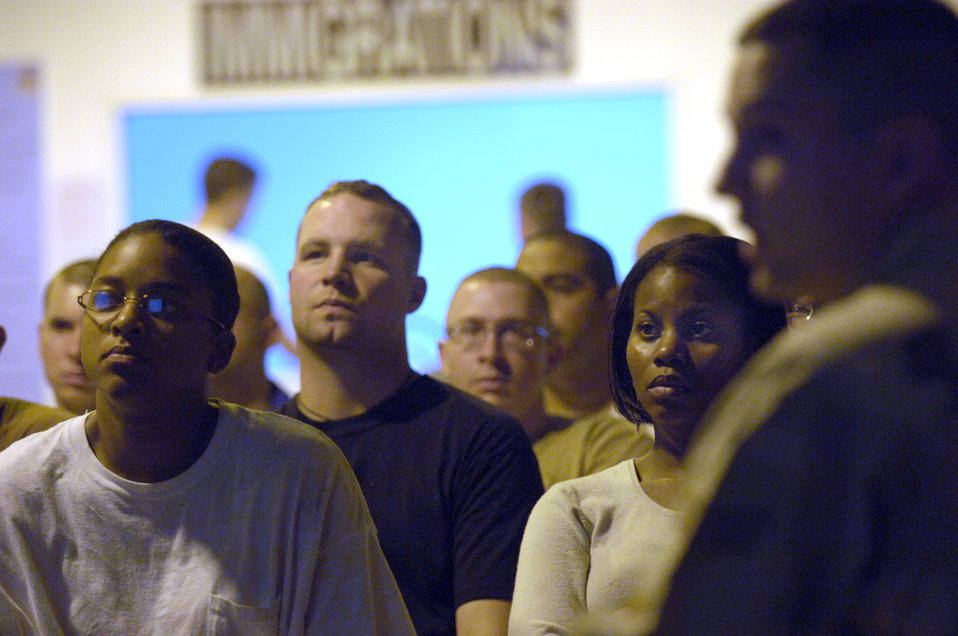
Work begins when boots hit the ground

Following a 24-plus hour flight from the United States, (left to right) Senior Airmen Tolera Jarman and Matt Eggleston and Staff Sgt. Vickie Sennet receive an inprocessing briefing at a forward-operating base in Southwest Asia Sept. 17 from Senior Airman David Shwalb.